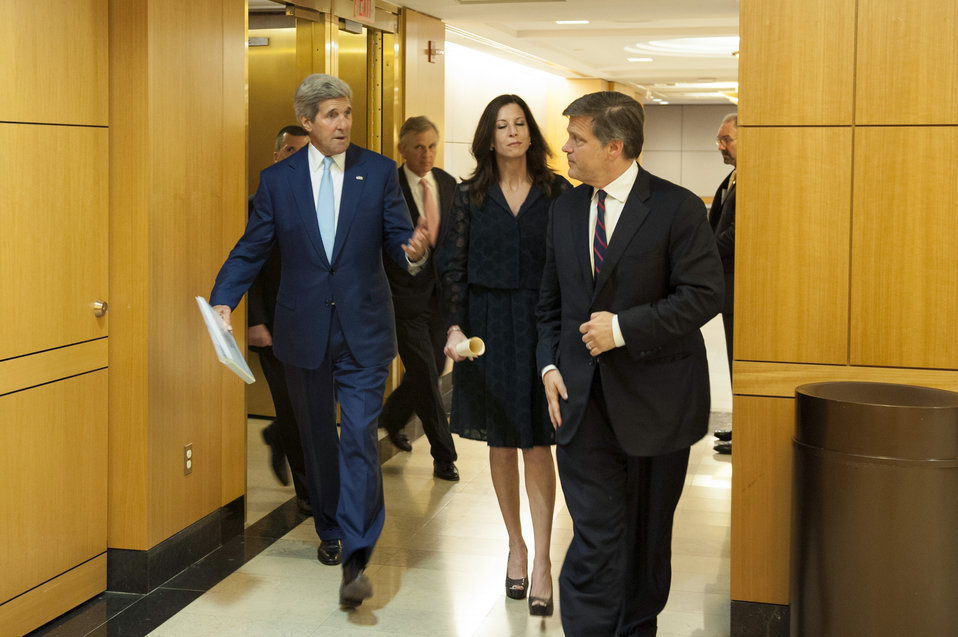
Secretary Kerry Chats With Doug and Anne Brinkley

U.S. Secretary of State John Kerry chats with historian Douglas Brinkley and his wife, Anne, before introducing him at the Open Forum at the U.S. Department of State in Washington, D.C., on May 28, 2014.